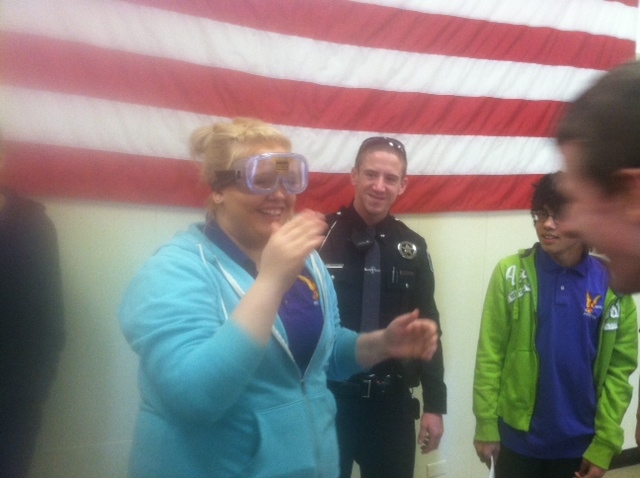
Getting the Facts on Drug Use

South Central Public Health provided activities at Mt. Harrison High School during NIDA's National Drug Facts Week in Heyburn, Idaho.
Teenagers from Mt. Harrison High School joined forces with other teens and scientists across the United States as part of the event.